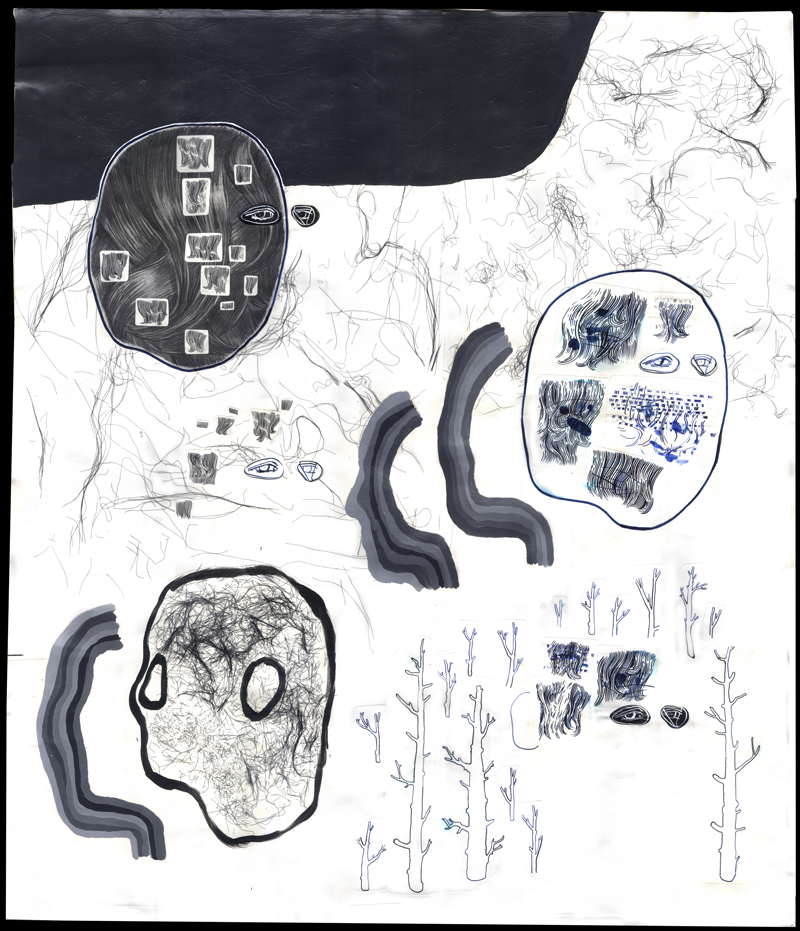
Carter'Untitled, (2006 #28)'32.5 x 37.5 inch.blue, white and black acrylic ink,black and white acrylic paint, pencil,synthetic hair, gel medium and paper on paper